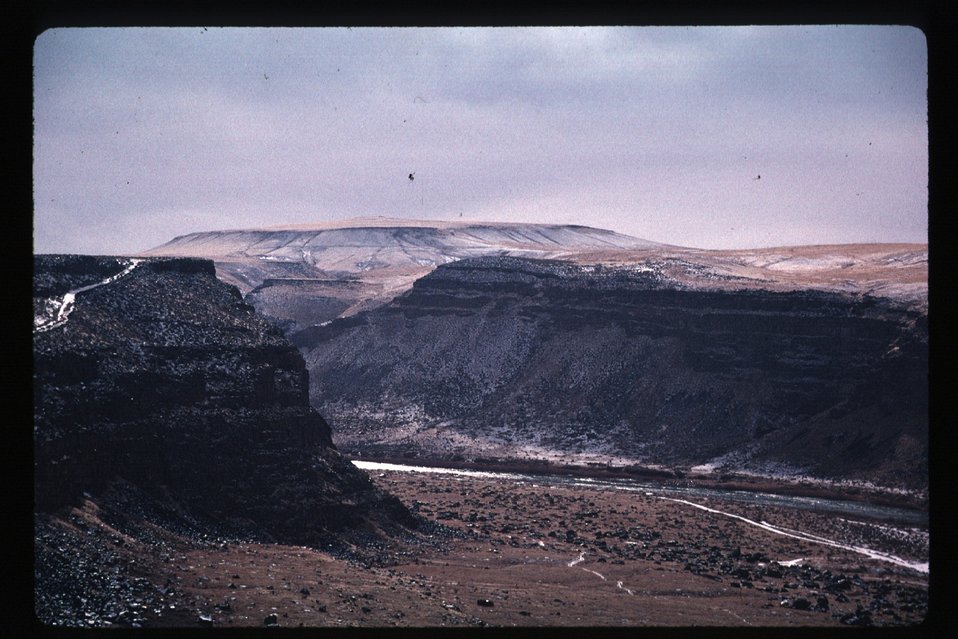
Scenic Birds of Prey National Conservation Area BOP Owyhee Field Office LSRD Lower Snake River District